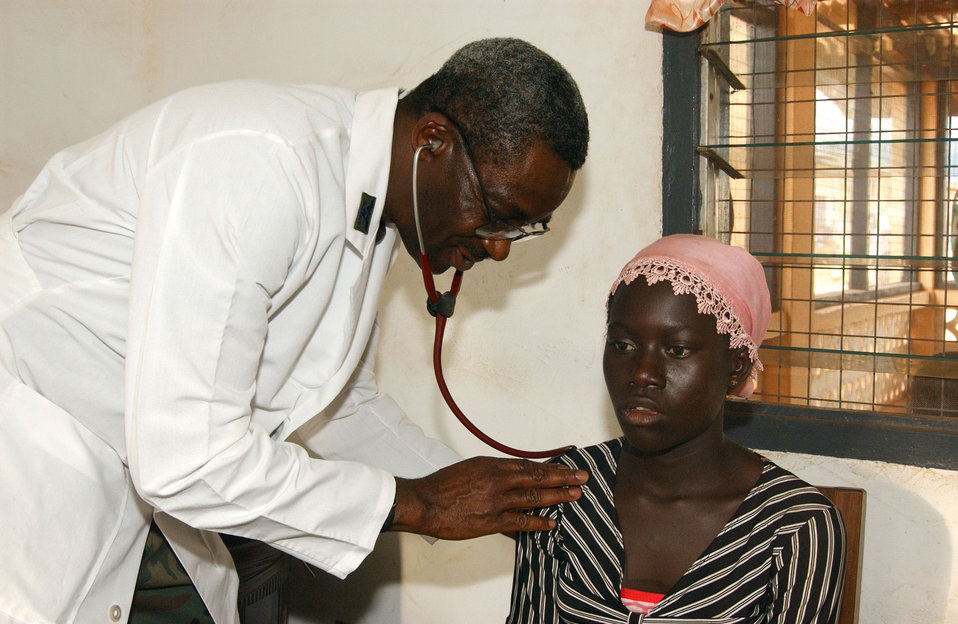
Med Flag deployment proves you can go home again

Col. (Dr.) Victor Folarin does an initial assessment on a Ghanaian woman complaining of chest pains during Med Flag 2006 in Tamale, Ghana, Sept. 15. Colonel Folarin, a native of Lagos, Nigeria, made his first trip back to his homeland since 1992 as the exercise commander. Colonel Folarin is the 52nd Medical Group flight surgeon and commander from Spangdahlem AB.